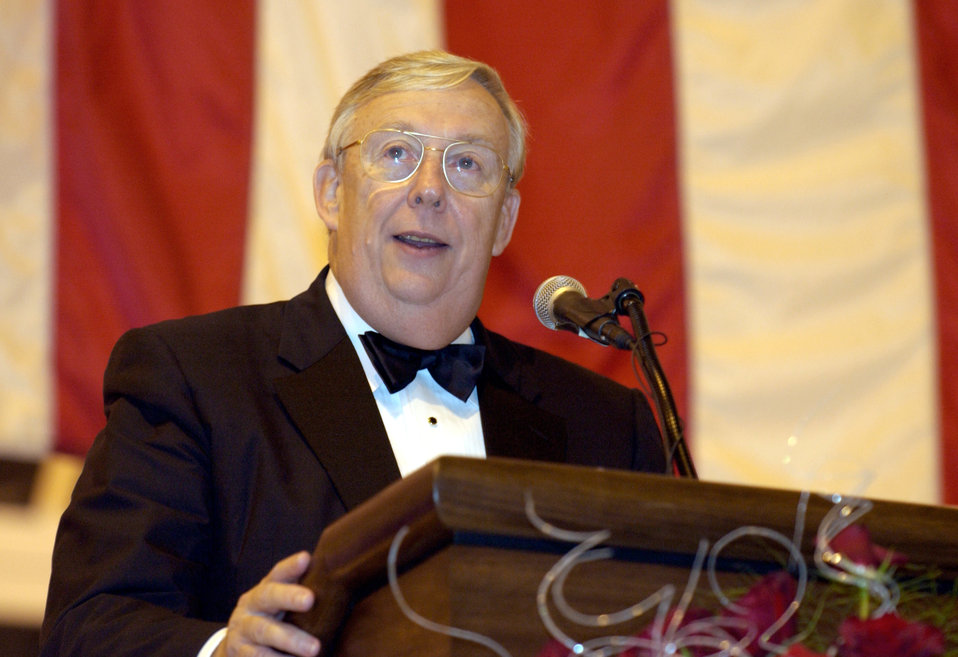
Attention to orders

ANDREWS AIR FORCE BASE, Md. -- The 20th secretary of the Air Force, Dr. James G. Roche, addresses several hundred airmen from across the Air Force. The airmen gathered here to honor and pay tribute to him by inducting him into the Order of the Sword on Sept. 13. The Order of the Sword is the highest honor Air Force noncommissioned officers can give to an individual and is patterned after two orders of chivalry founded during the Middle Ages in Europe.